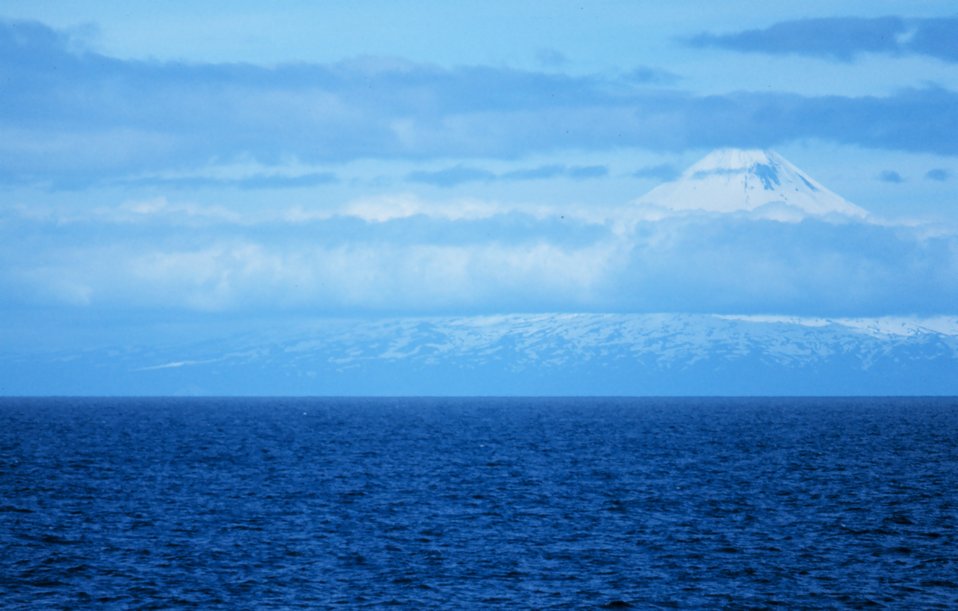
Augustine Volcano